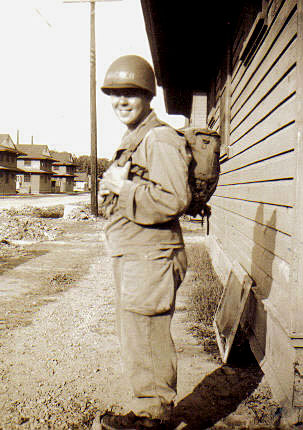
Retired chief reflects on 60 years of service

Retired Chief Master Sgt. Al Kremer, now an Air Force civilian employee at United States Strategic Command headquarters at Offutt Air Force Base, Neb., began his service with Army basic training at Fort Eustis, Va., in the summer of 1946. He recently eclipsed a combined 60 years of service as a military member and civilian employee.